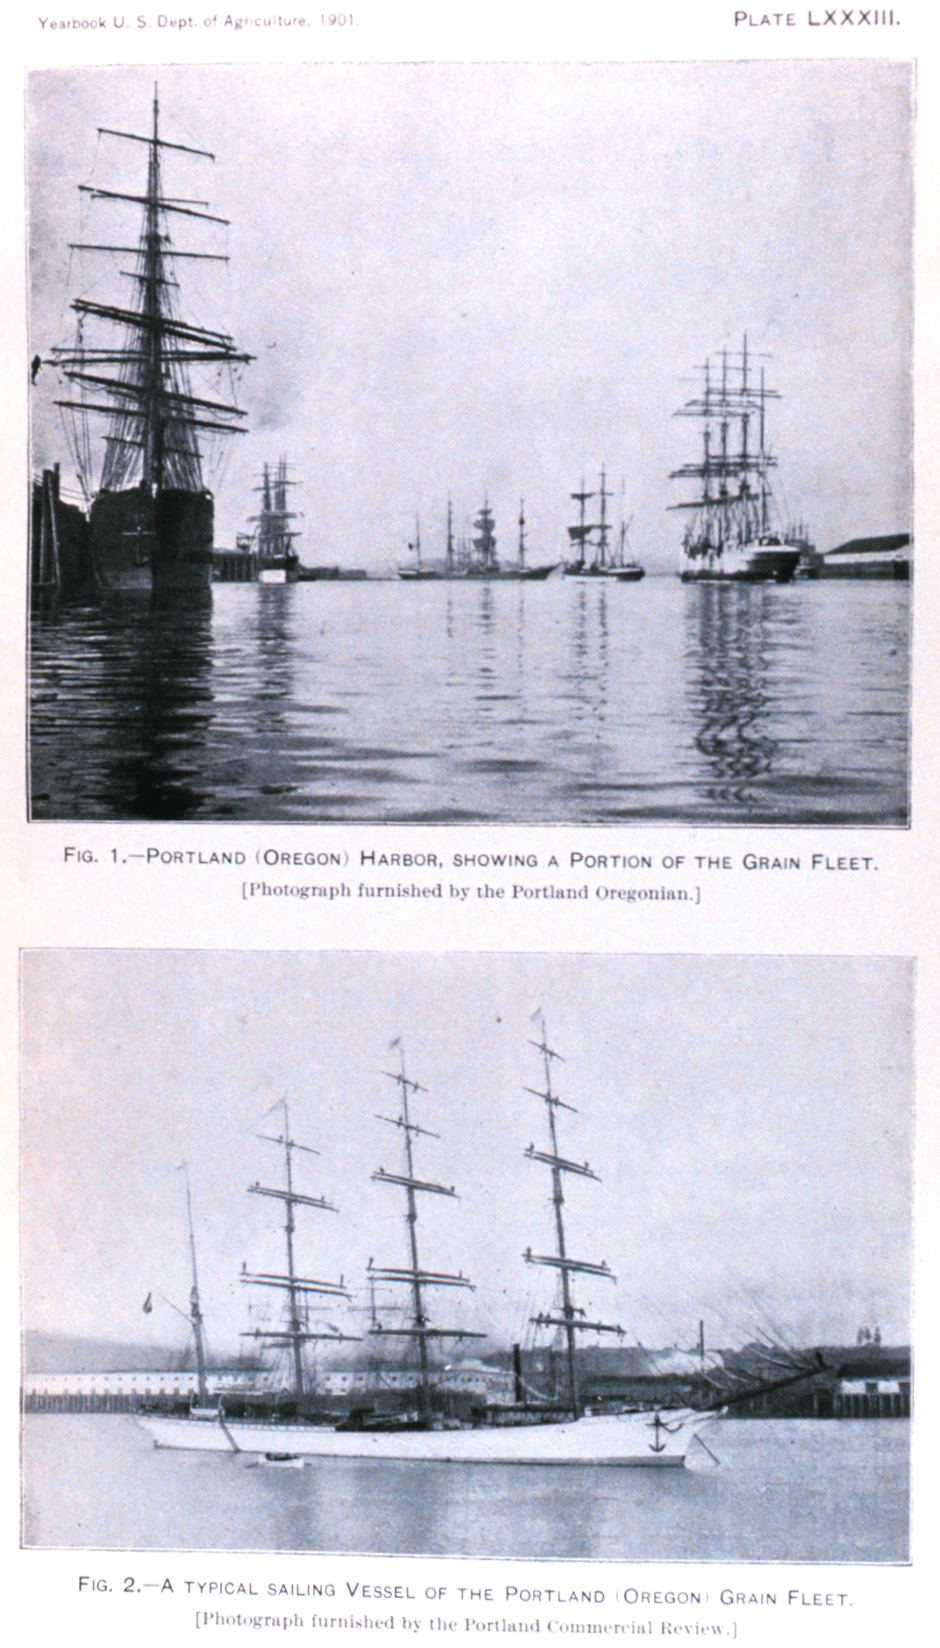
Portland, Oregon, waterfront. In: 'Wheat Ports of the Pacific Coast' by Edwin S. Holmes, Jr. Published in: Yearbook of the United States Department of Agric ulture 1901. Plate LXXXIII, p. 570. Library Call Number S21 .A2 .